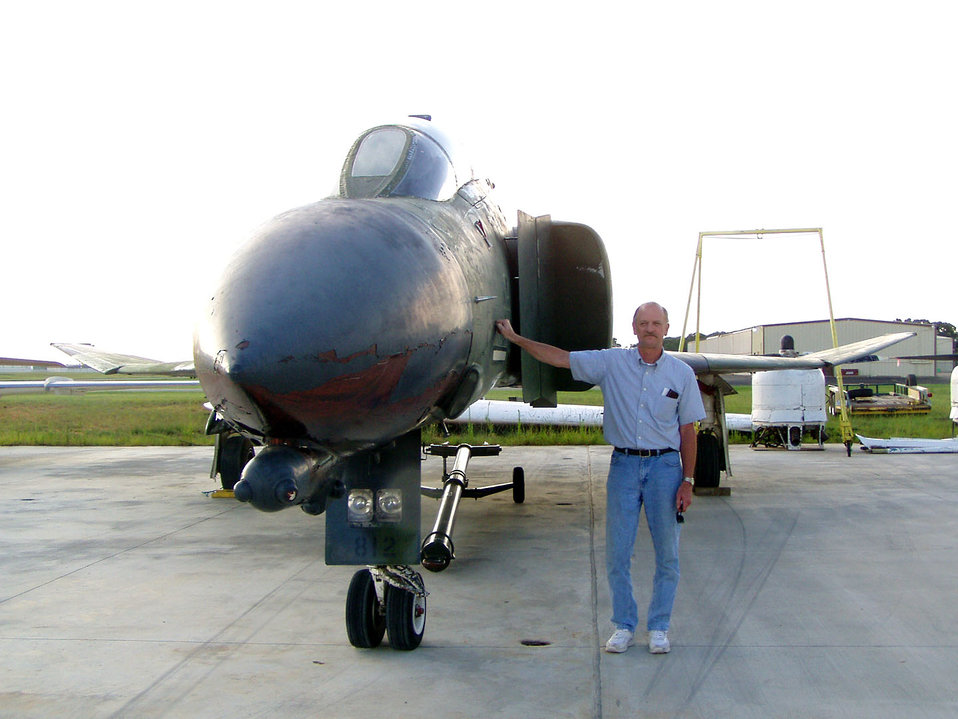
Honoring a hero: a son's final tribute to his father

Troy Curnutte looked high and low for an F-4D Phantom to help memorialize his father, Lt. Col. Bill Curnutte, a World War II and Vietnam War veteran. Mr. Curnutte found this Phantom, which his father actually flew from Da Nang Air Base, South Vietnam, for display at the Historic Aviation Memorial Museum in Tyler, Texas.